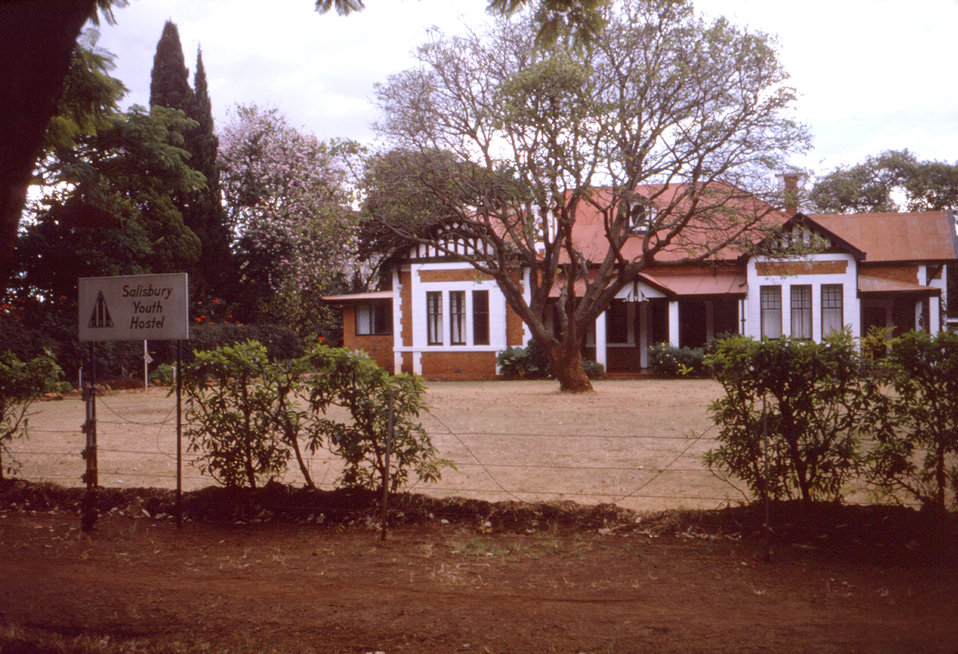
This was the outside of a student hostel in Salisbury, Rhodesia, (now Harare, Zimbabwe), which was one of the many sites under investigation during the country's Marburg virus outbreak of 1975.